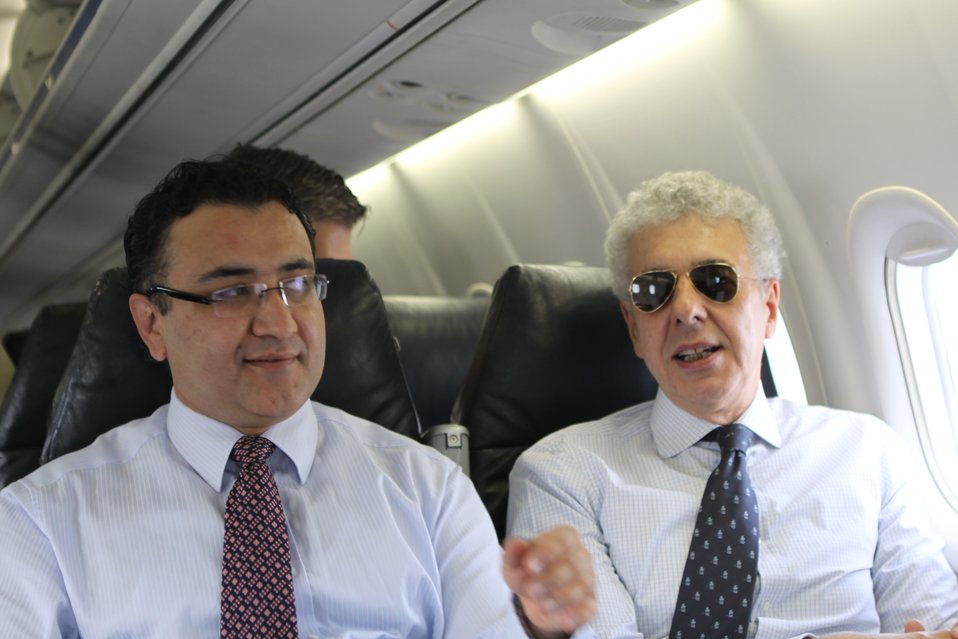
100525 Hirat Marble Conference 010